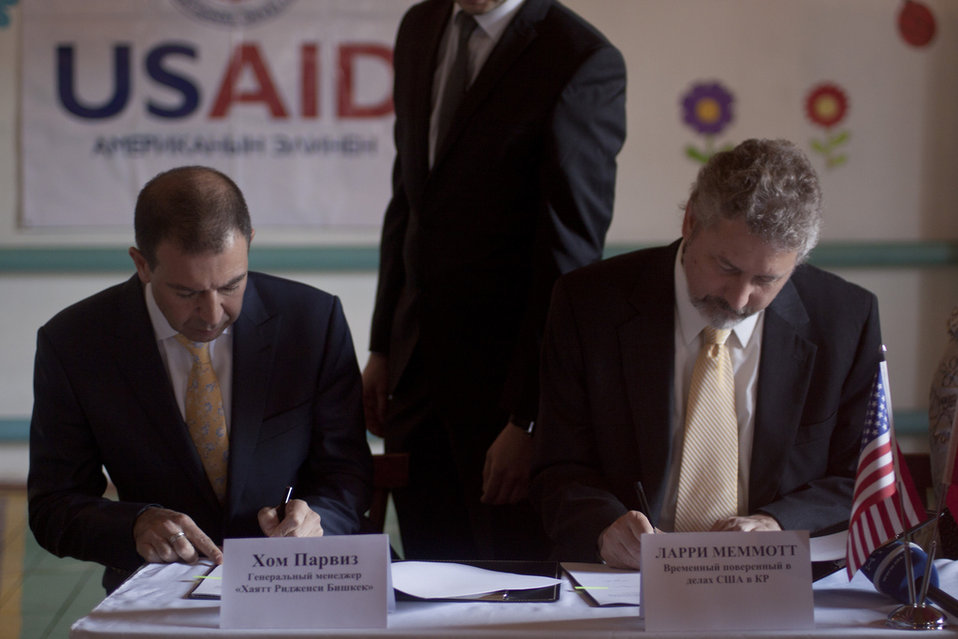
Charge d'Affaires Memmott Presents U.S. Grants To Support Kyrgyz Republic Orphanage

Larry Memmott, Chargé d'Affaires of the U.S. Embassy in Bishkek, Kyrgyzstan, presents two grants from the U.S. Government to support the rehabilitation of the Krasnaya Rechka orphanage in Krasnaya Rechka, Kyrgyzstan, on April 28, 2011.